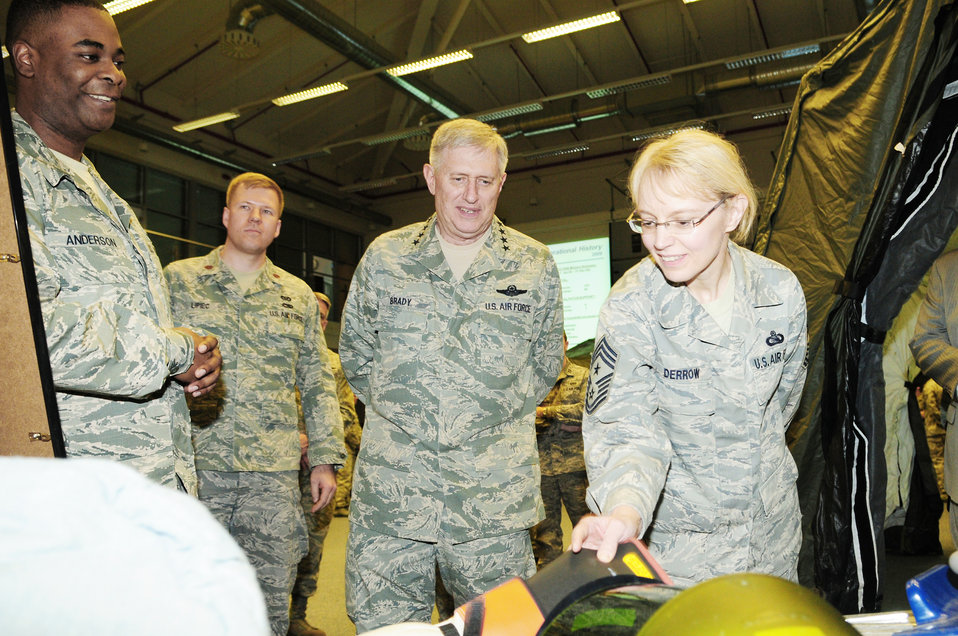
Visit to 435th Air Ground Operations Wing

Gen. Roger A. Brady, U.S. Air Forces in Europe commander, and Chief Master Sgt. Pamela Derrow, USAFE command chief master sergeant, inspect personal protective equipment March 16, 2010, while Staff Sgt. Louis Anderson of the 435th Construction and Training Squadron explains how it is used. General Brady and Chief Derrow spent the day visiting the facilities of the 435th Air Ground Operations Wing at Ramstein Air Base, Germany, their first visit to USAFE's newest wing since it stood up in July 2009.